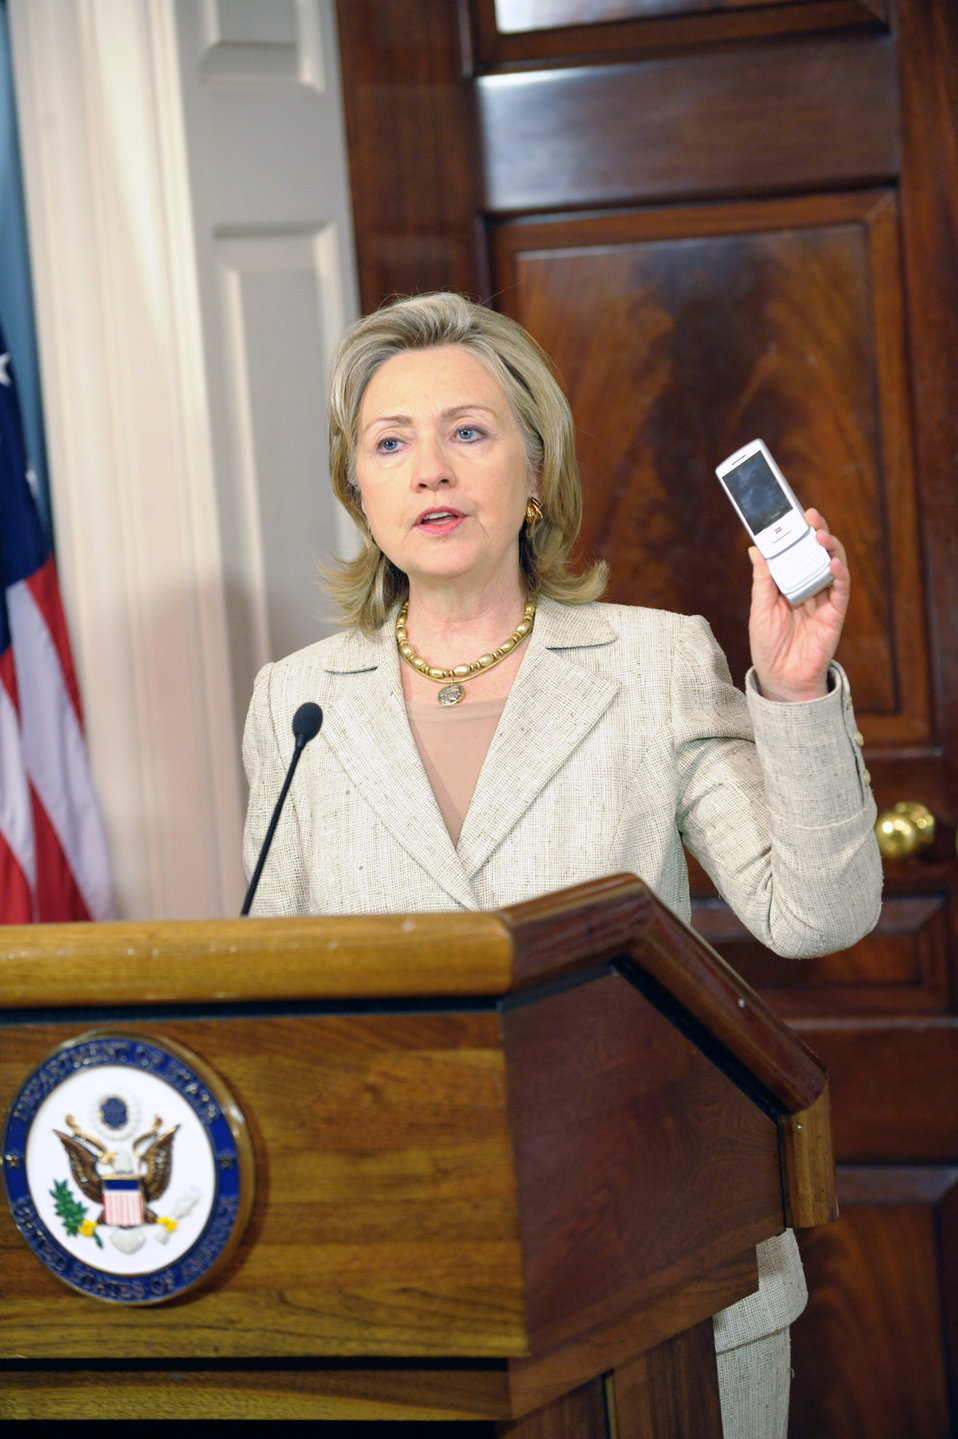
Secretary Clinton Delivers a Statement on the Flooding in Pakistan

U.S. Secretary of State Hillary Rodham Clinton delivers a statement on the flooding in Pakistan at the U.S. Department of State in Washington, D.C., on August 4, 2010.